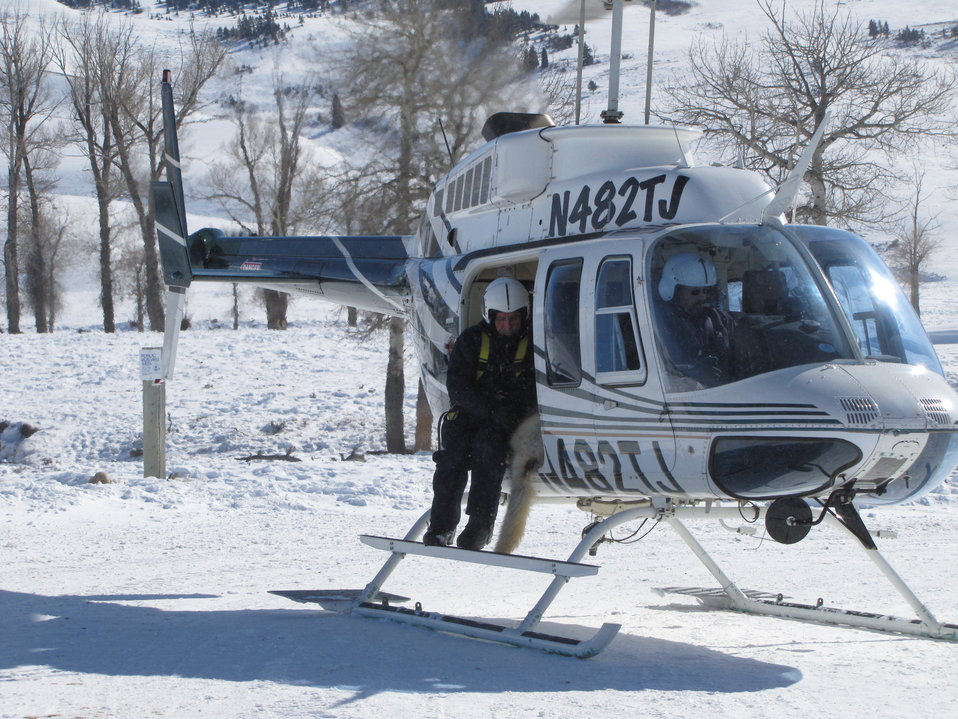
A Tell-Tale (or is that Tell-Tail?) Passenger

Northern Rockies Wolf Coordinator Mike Jimenez arrives by helicopter to a location where a team of refuge field staff await with collaring equipment. The tail of one of the passengers can be seen dangling from the aircraft.